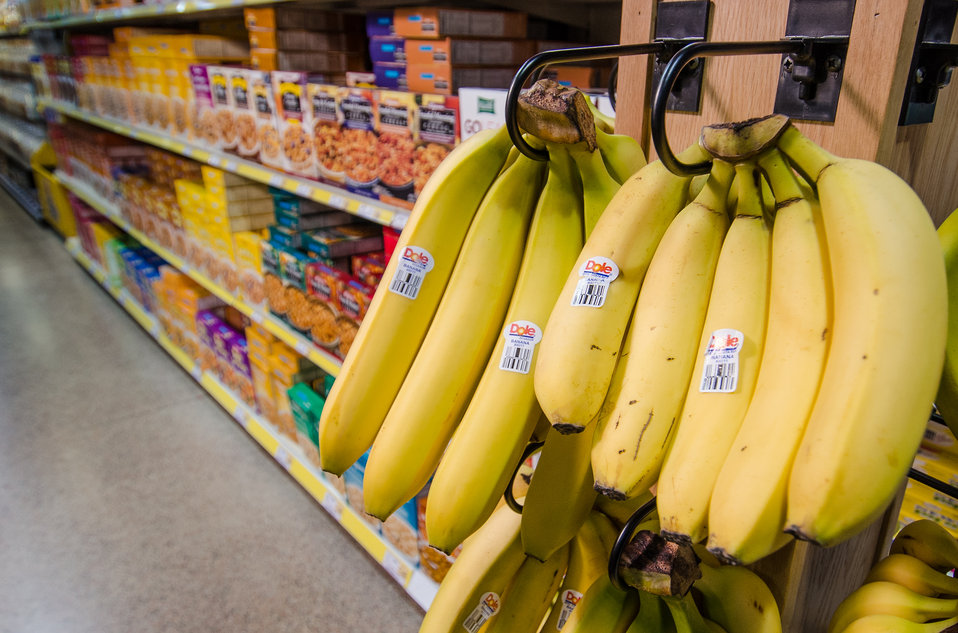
Bananas and cereals at a grocery store in Fairfax, Virginia, on March 3, 2011.